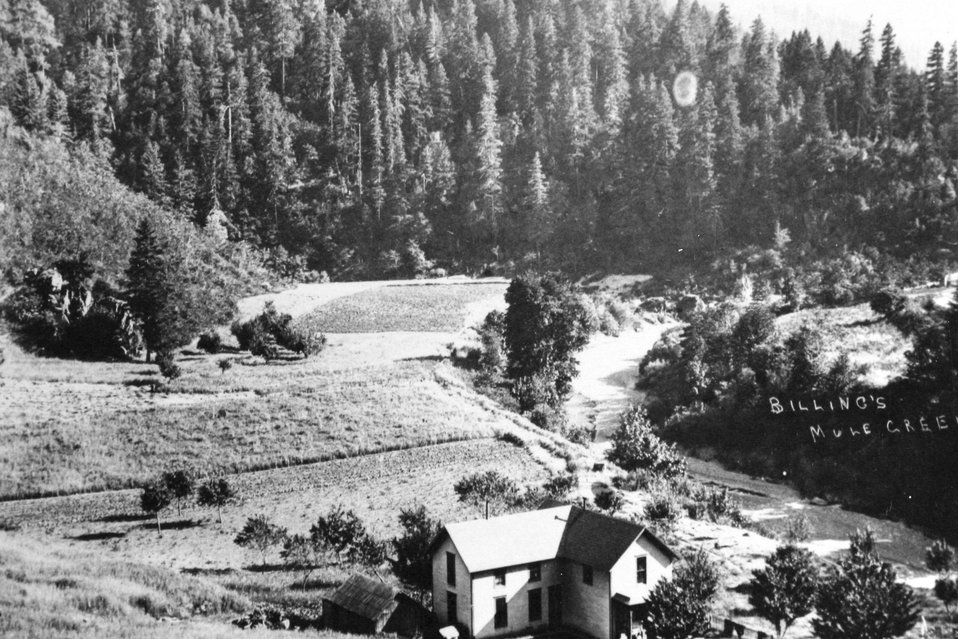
George Billings Ranch a t Mule Creek